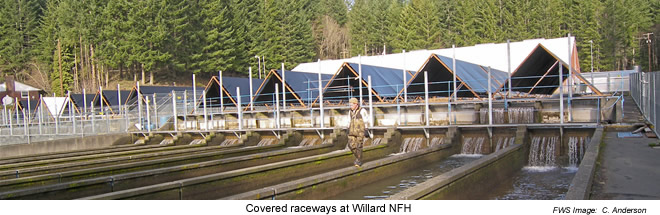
Covered Raceways - Willard National Fish Hatchery

Willard National Fish is located 5 miles north of Route 14 in southern Washington State, along the Columbia River between the towns of Stevenson and Underwood.